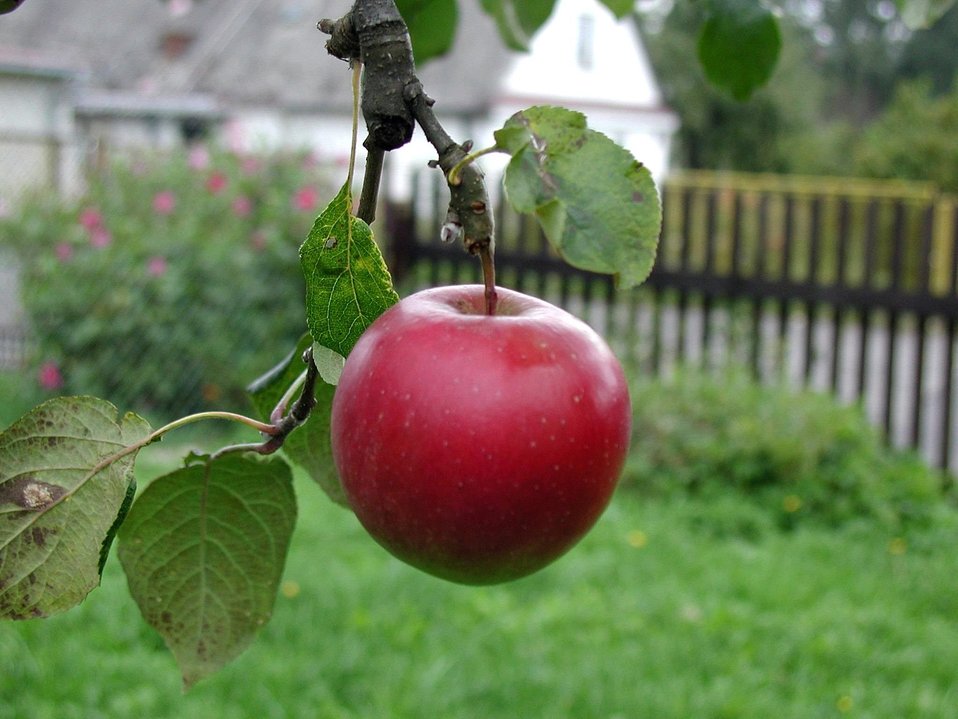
English:
Image title: Beautiful red apple Image from Public domain images website, http://www.public-domain-image.com/full-image/flora-plants-public-domain-images-pictures/fruits-public-domain-images-pictures/apple-pictures/beautiful-red-apple.jpg.html